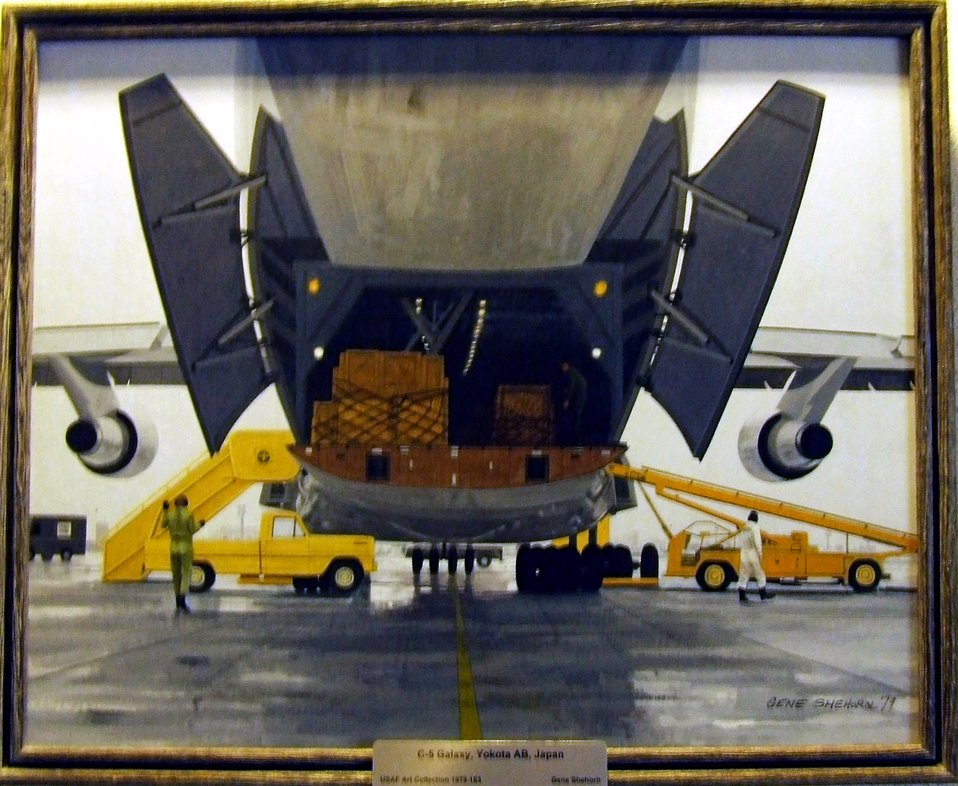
Expeditionary center's Air Force art collection inspires Airmen

This 1979 painting by artist Gene Shehorn, entitled